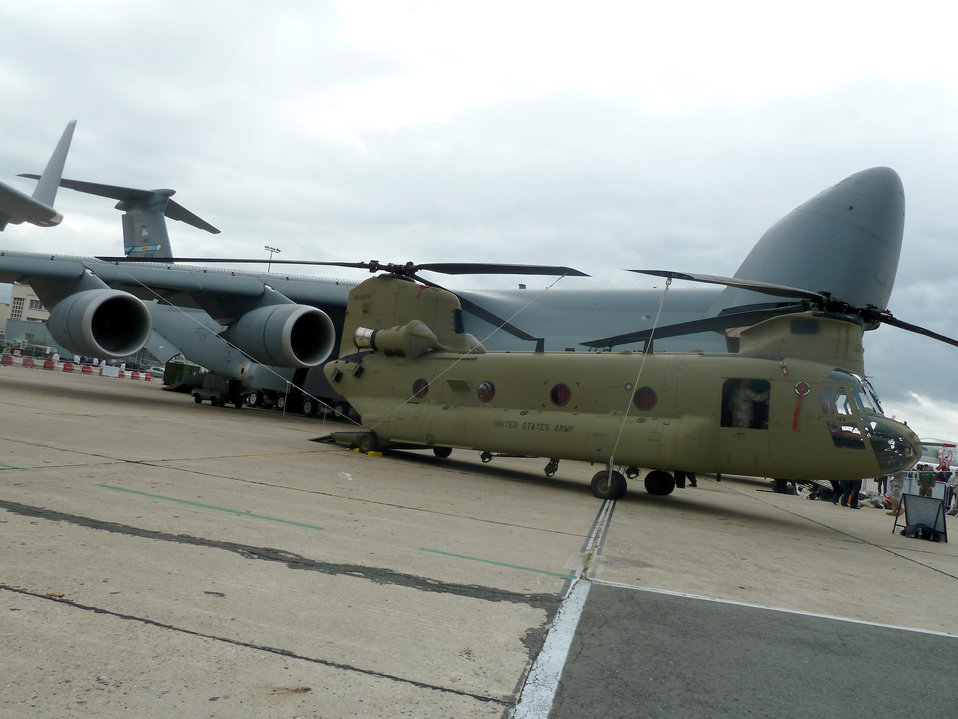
Paris Air Show

An Army CH-47F Chinook and an Air Force C-5M Super Galaxy are two of the 11 U.S. aircraft on display during the 49th International Paris Air Show at the Le Bourget Airport in Paris.